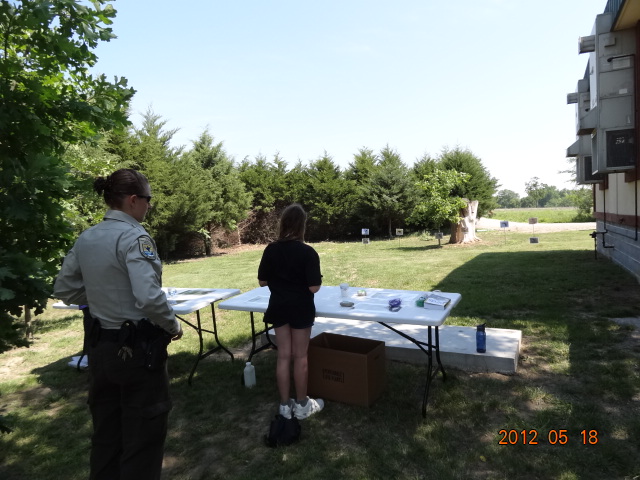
International Migratory Bird Day 2012

Marais des Cygnes National Wildlife Refuge